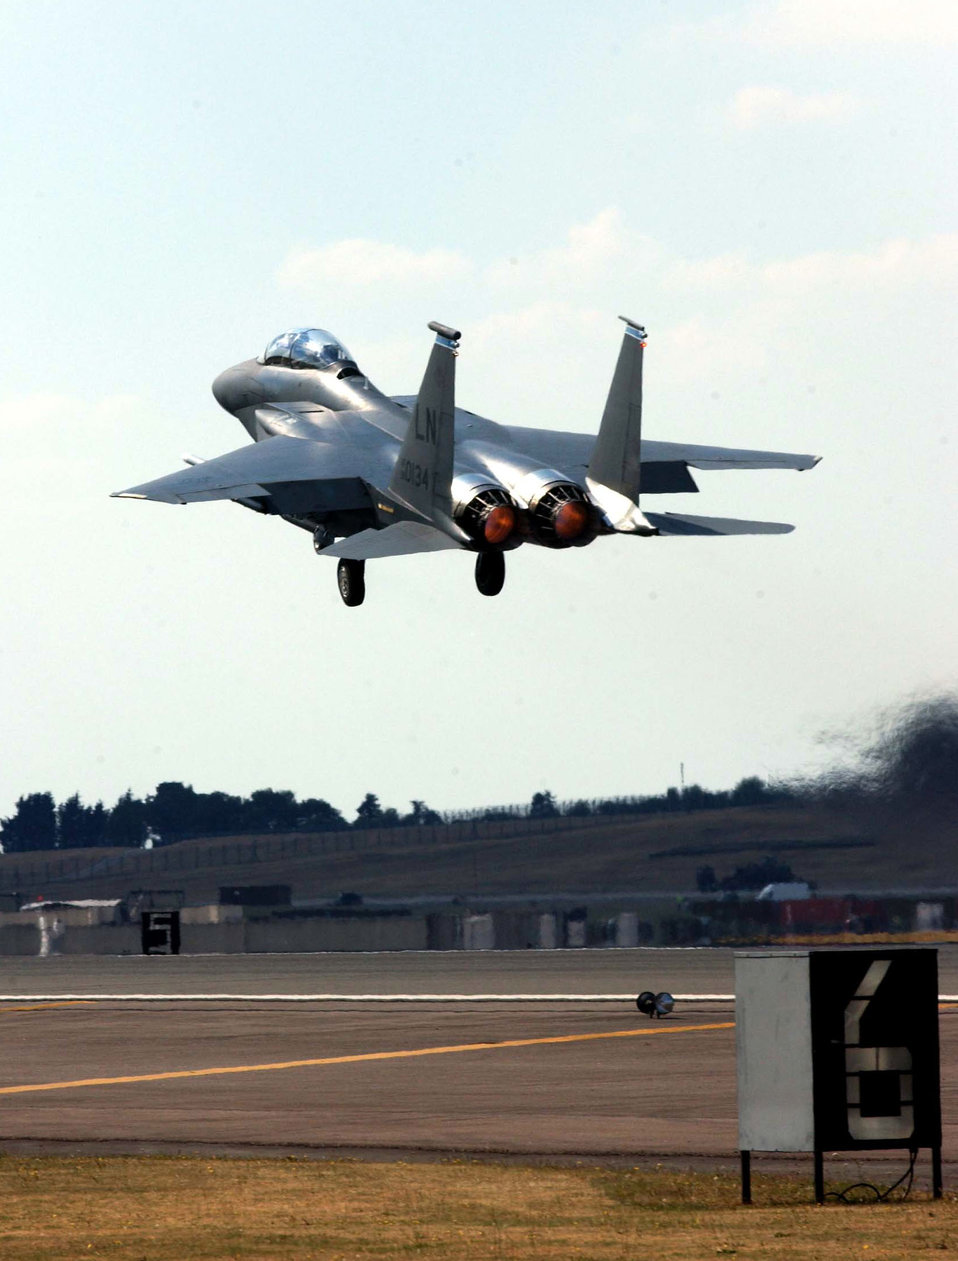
Eagle lift off

ROYAL AIR FORCE LAKENHEATH, England -- An F-15E Strike Eagle from the 492nd Fighter Squadron takes off during a mission here Sept. 4. The Strike Eagle is considered the most advanced two-seat tactical fighter aircraft in the world, and its radar system allows aircrews to pick out bridges and airfields from more than 80 miles away.